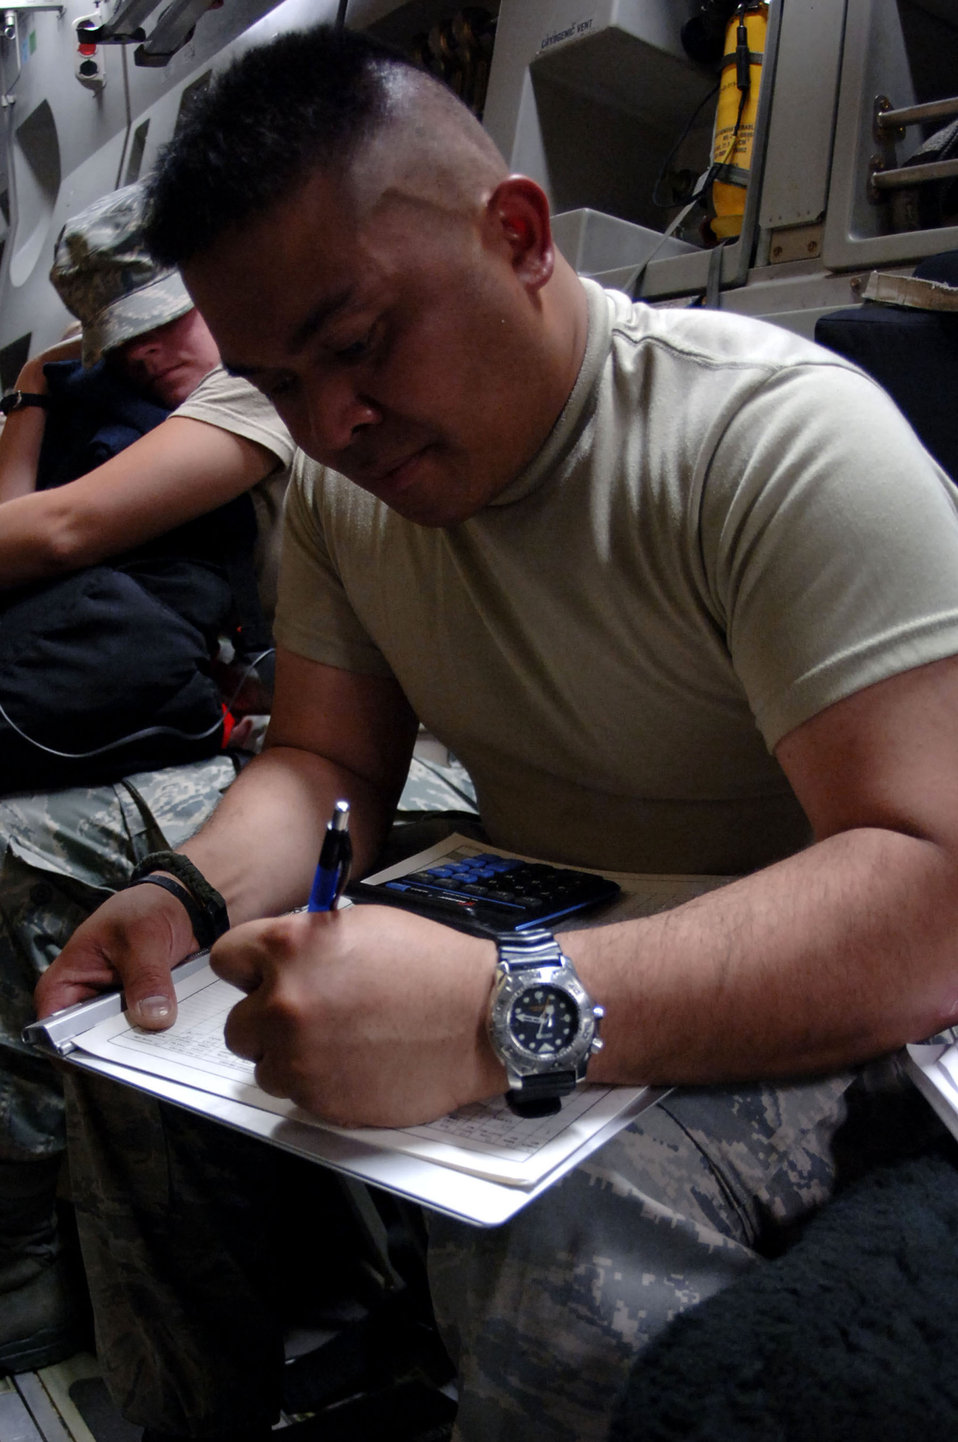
Waiting for Hurricane Gustav

Staff Sgt. Audy Cayanan from Travis Air Force Base, Calif., fills out shipping documents while flying in C-17 Globemaster III Aug. 31. Sergeant Cayanan, along with other personnel, equipment and medical supplies on the aircraft were redirected from Beaumont, Texas, to Altus AFB, Okla., to reposition assets for Hurricane Gustav's landfall.